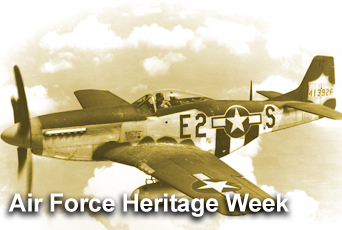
Air Force Heritage Week

Columbus, Ohio has been selected to play host to Air Force Heritage Week in late September in conjunction with The Gathering of Mustangs and Legends being held at Rickenbacker International Airport Sept. 27-30.